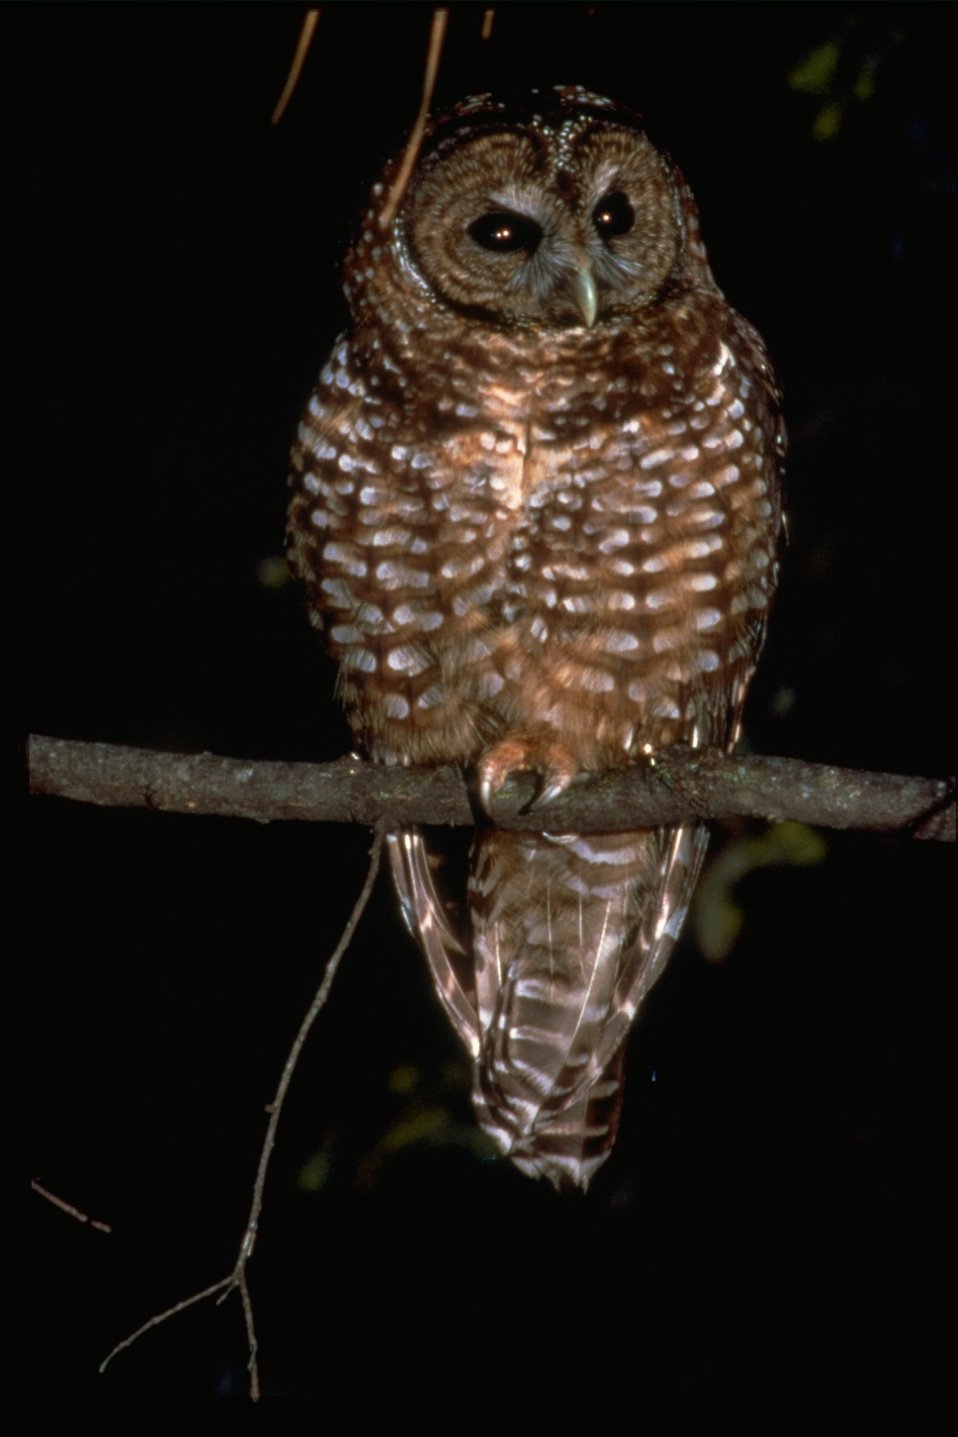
A spotted owl perched on a branch.